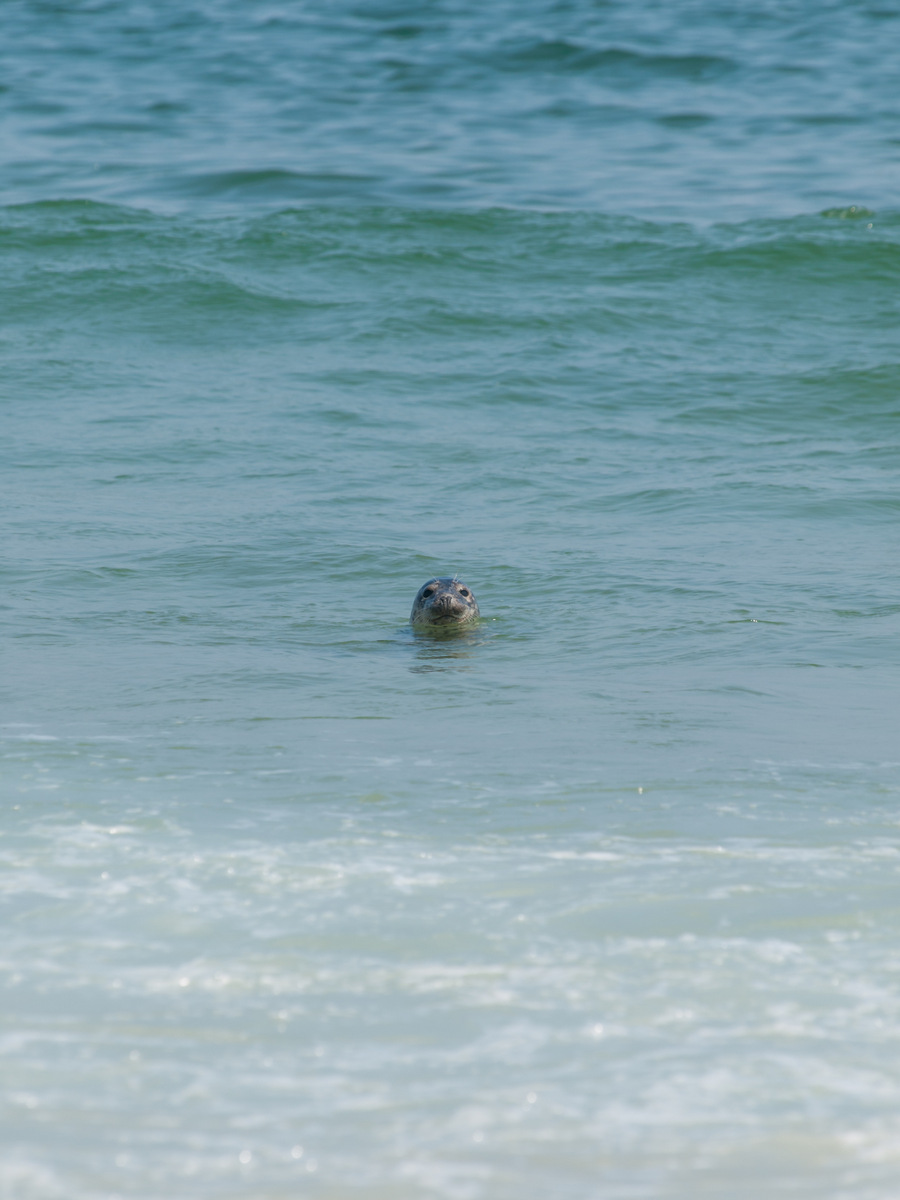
Harbor Seal

Inquisitive harbor seal at Monomoy National Wildlife Refuge.